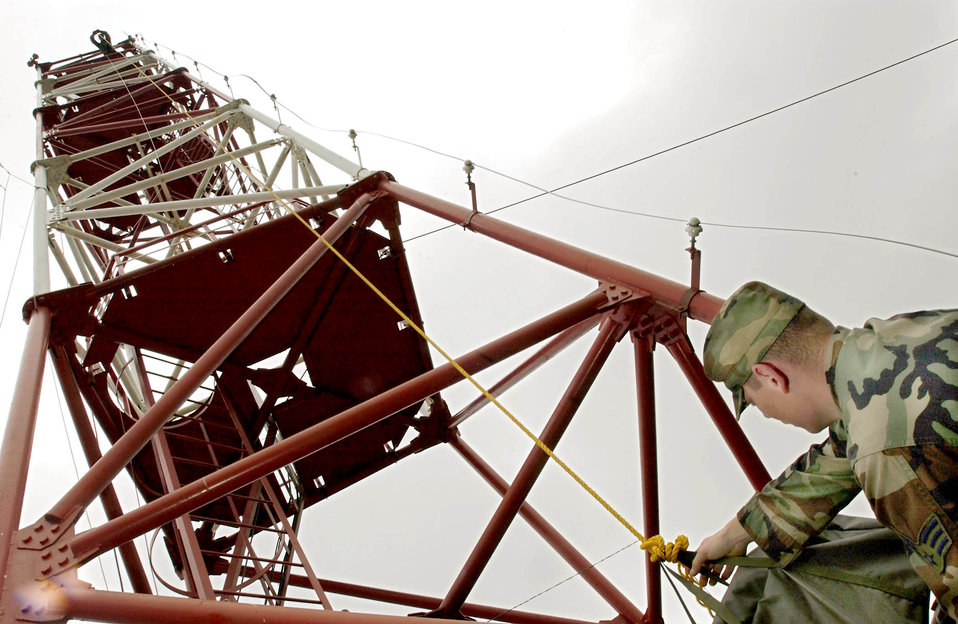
Strong endeavors

MIHAIL KOGALNICEANU AIRFIELD, Romania -- Senior Airman Lawrence Tobin takes a bag of communication tools from a tower here before exercise Combined Endeavor 2005. Airmen with the 1st Combat Communications Squadron from Ramstein Air Base, Germany, prepared communication equipment to test the interoperability of command, control, communications and computer systems among 1,200 servicemembers and civilians from more than 43 countries. The Airmen successfully completed more than 1,400 tests.